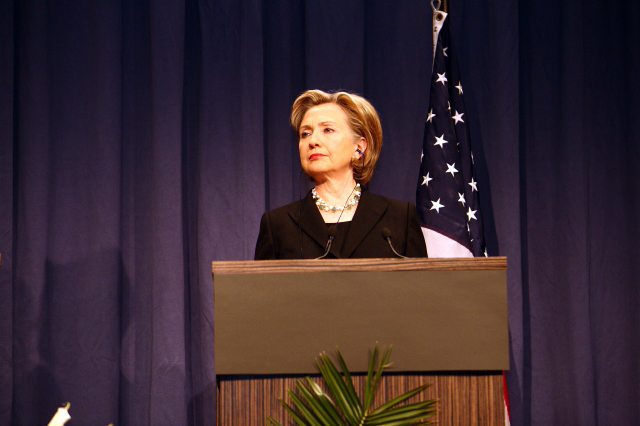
Press Conference With Russian Foreign Minister

Press conference after dinner meeting between U.S. Secretary of State Hillary Rodham Clinton and Russian Foreign Minister Sergey Lavrov in Geneva, Switzerland March 6, 2009.